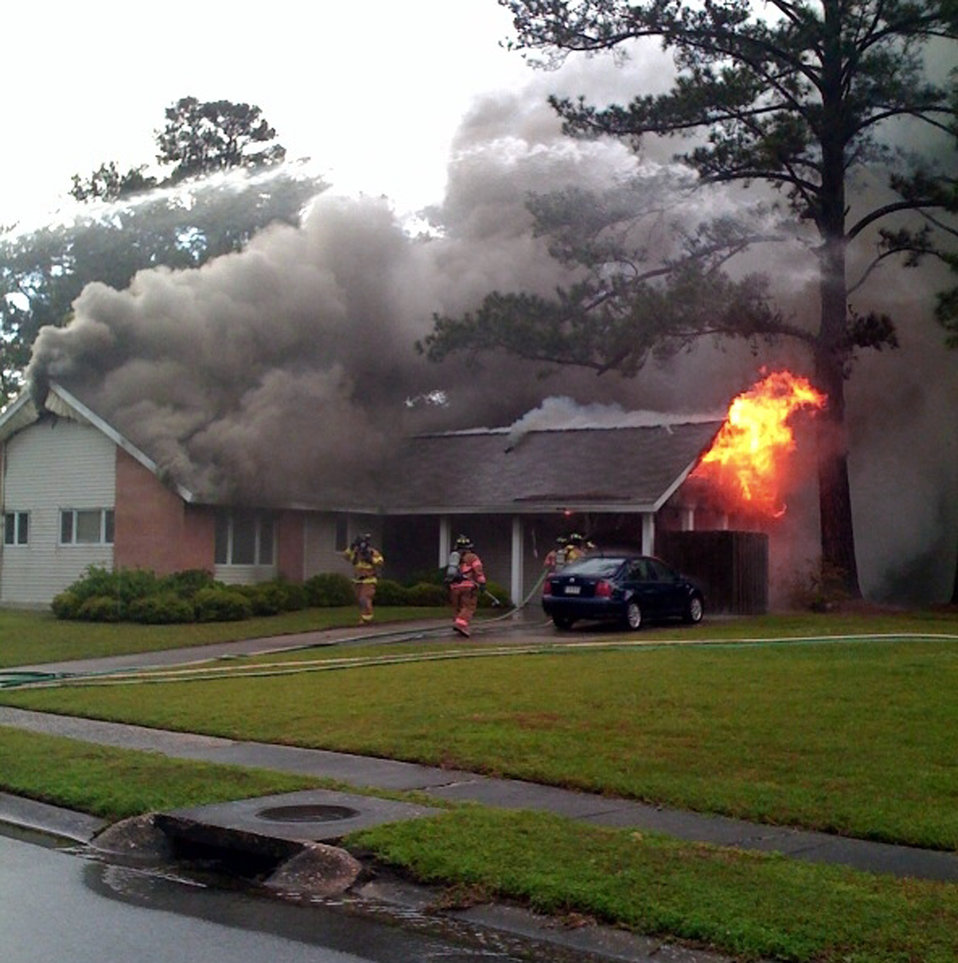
Lightning strikes a need for renter?s insurance

Members of the 437th Civil Engineer Squadron fire department at Charleston Air Force Base, S.C., respond to a fire April 20 at the base housing unit occupied by 1st Lt. Richard and Rachel Kerr. The Kerr's house caught fire after it was struck by lightning during a severe thunderstorm.